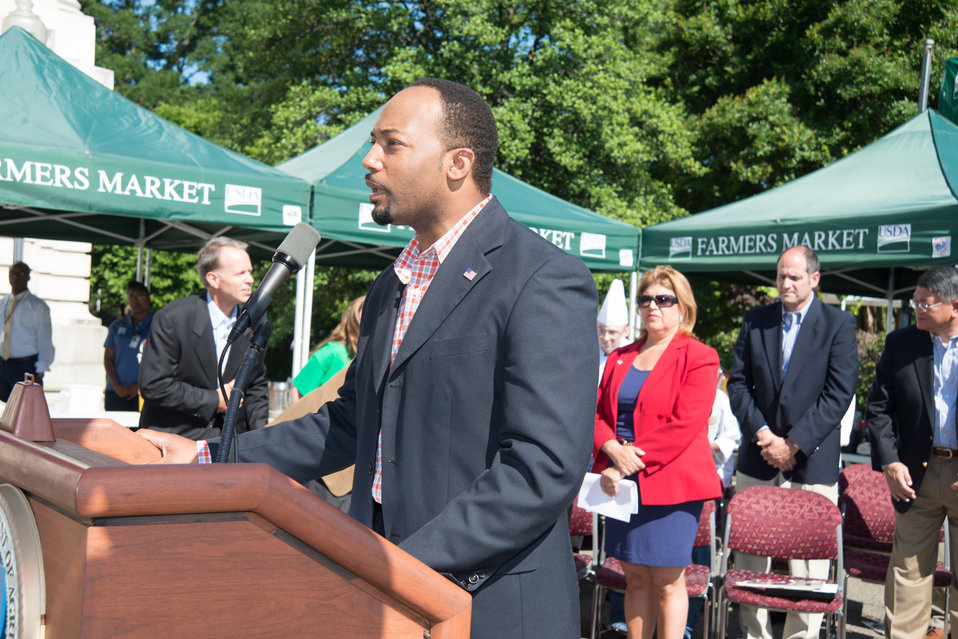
U.S. Department of Agriculture (USDA) Agricultural Marketing Service (AMS) Transportation and Marketing Program Deputy Administrator Arthur Neal speaks at the opening of USDA’s Farmers Market in the east parking lot of USDA in Washington, D.C. on Friday, Jun. 6, 2014.